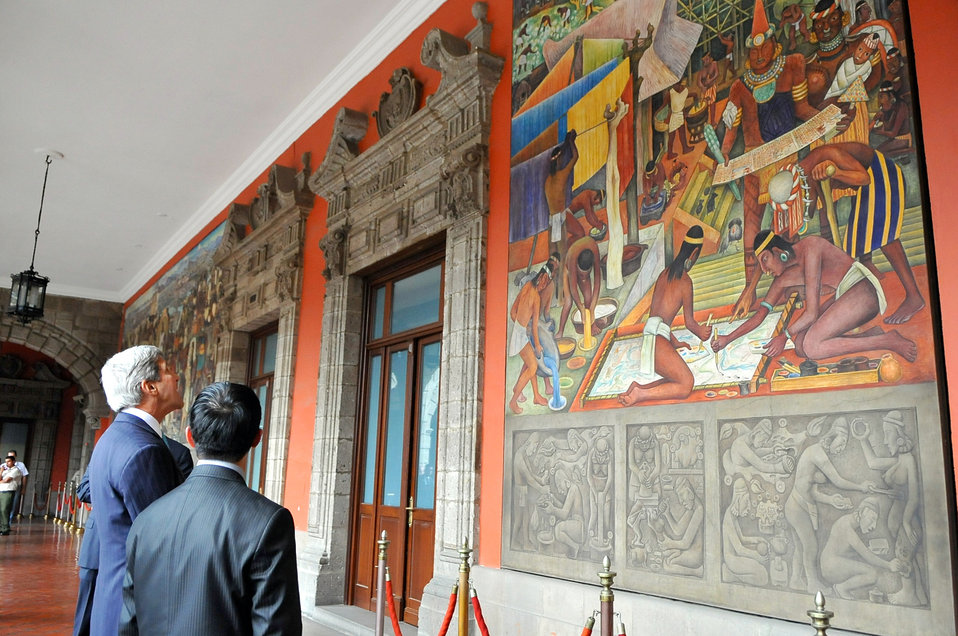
Secretary Kerry Admires Diego Rivera Murals in Mexico City

U.S. Secretary of State John Kerry, joined by guide Rafael Rios Chagolla, admires the detail in a Diego Rivera mural as the Secretary visited the Palacio Nacional in Mexico City on May 21, 2014.